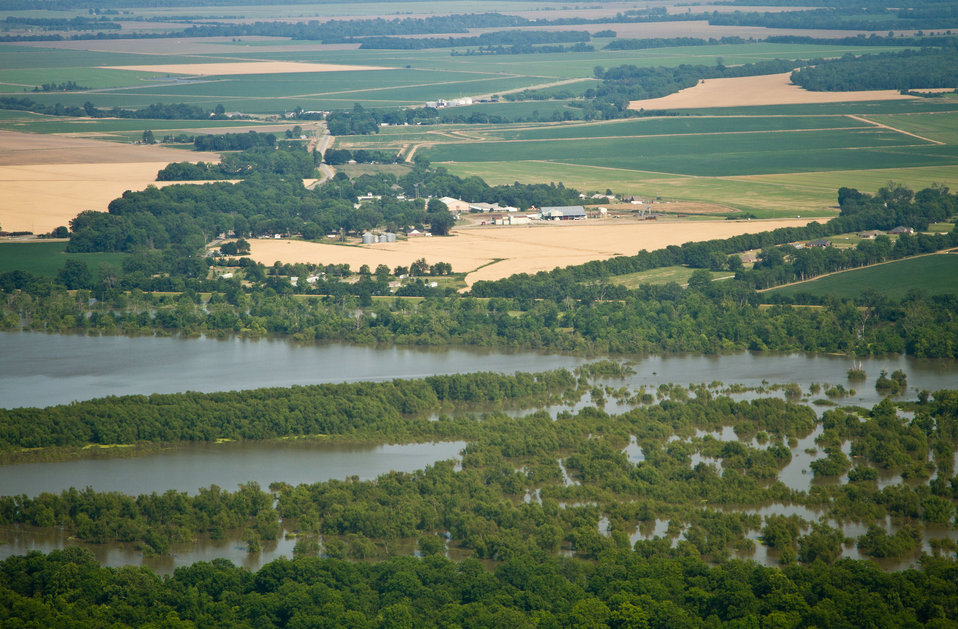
Aerial view of Mississippi River flood of farms, wilderness, and populated areas, on Thursday, May 19, 2011. from the MS side. Aerial platform was a UH-60 Blackhawk commanded by Col. Kennedy and his flight crew from the Army Aviation Support Facility #1 at Hawkins Field in Jackson, MS.